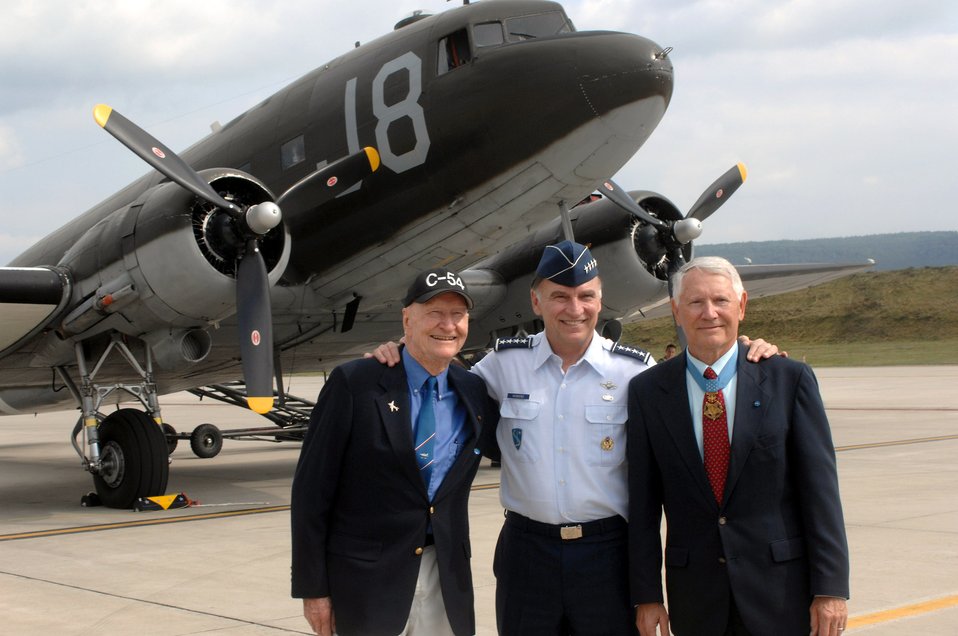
Command celebrates Air Force's 60th Anniversary

(From left) The Berlin Candy Bomber, retired Col. Gail Halvorsen; U.S. Air Forces in Europe Commander, Gen. William T. Hobbins; and Medal of Honor recipient, retired Lt. Col. Leo Thorsness, stand in front of the C-47 Dakota at U.S. Air Forces in Europe's Air Force 60th Anniversary celebration Aug. 11 at Ramstein Air Base, Germany.